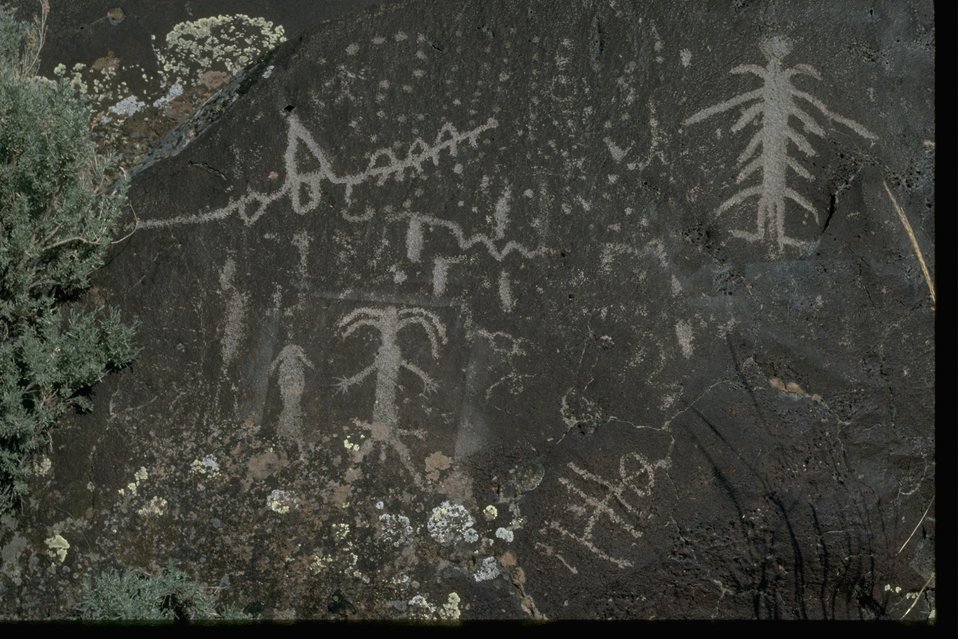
Rock Art. OR 3-59